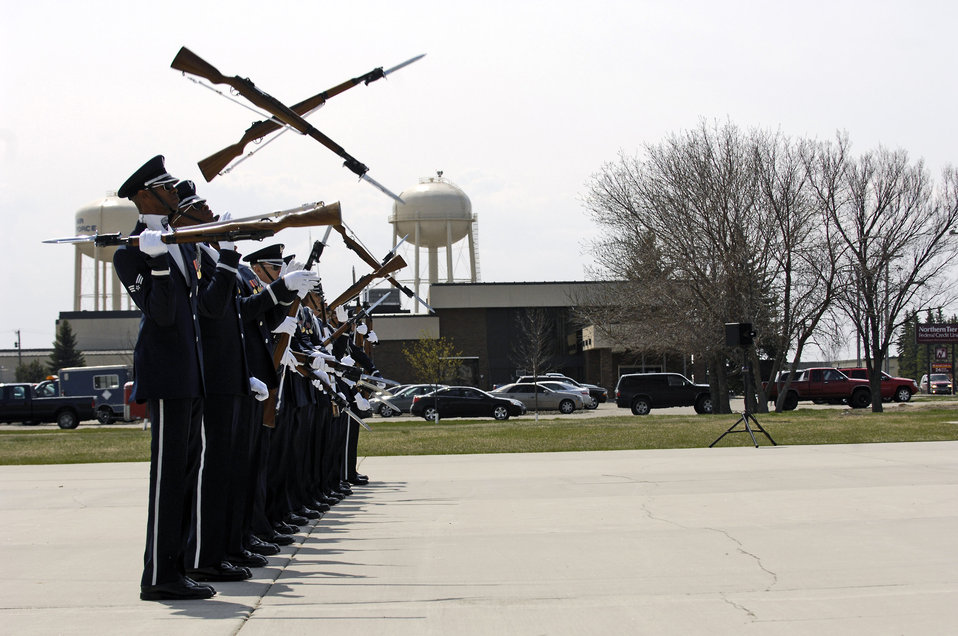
Drill team provides northern exposure for Air Force

Rifles cross perfectly during the Air Force Honor Guard Drill Team's line sequence May 8 at Minot Air Force Base, N.D. The team is the traveling component of the Air Force Honor Guard and tours world-wide representing all Airmen and showcasing Air Force precision to recruit, retain and inspire for the Air Force mission.